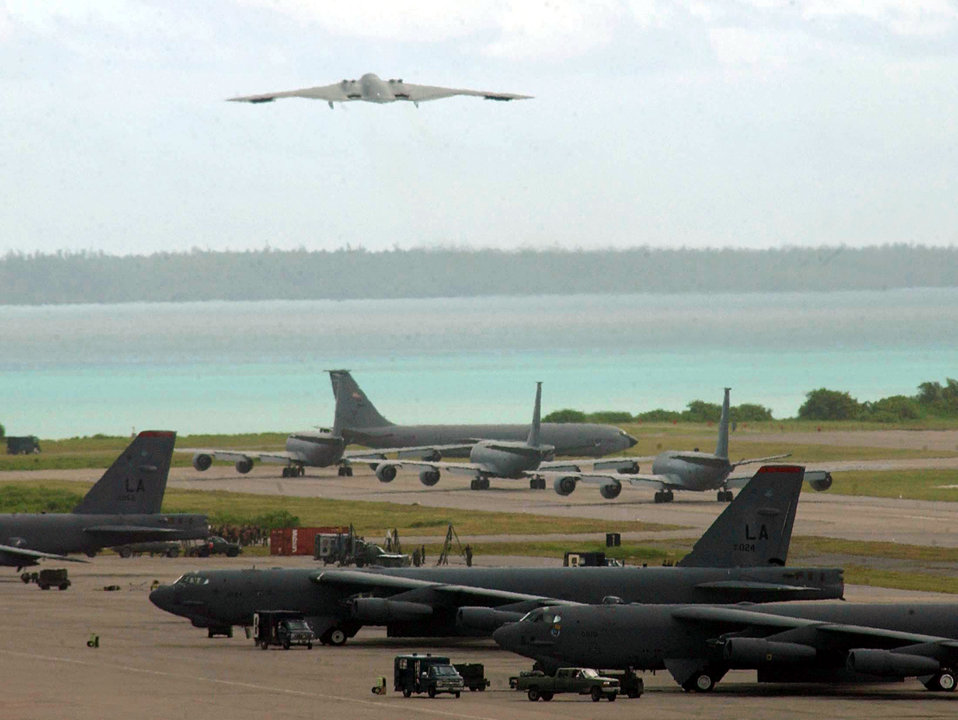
Busy bombers

OPERATION ENDURING FREEDOM -- A B-2 Spirit takes off for an Operation Iraqi Freedom bombing mission while other aircraft from 40th Air Expeditionary Wing prepare to launch from a forward-deployed location. The B-2's